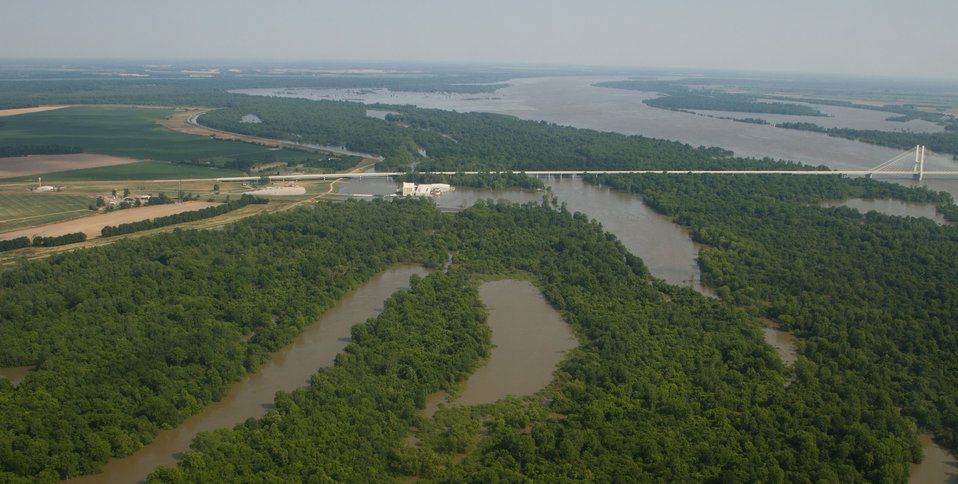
Aerial view of the Greenville Bridge spanning the Mississippi River at flood levels, on Thursday, May 19, 2011. Riverfront in Greenville, Mississippi avoided major damage with temporary levees around specific structure. The aerial platform was a UH-60 Blackhawk commanded by Col. Kennedy and his flight crew from the Army Aviation Support Facility #1 at Hawkins Field in Jackson.